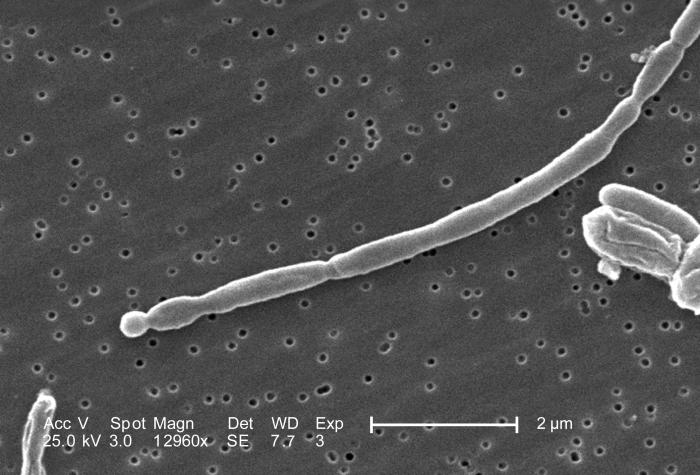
At a high magnification of 12,960X, this scanning electron micrograph (SEM) revealed some of the morphologic details displayed by a number of joined Gram-negative Escherichia coli bacteria. These bacteria were members of the strain, 0:169 H41 ETEC (Enterotoxigenic E. coli). See PHIL 11379 for a colorized version of this image.What is ETEC?